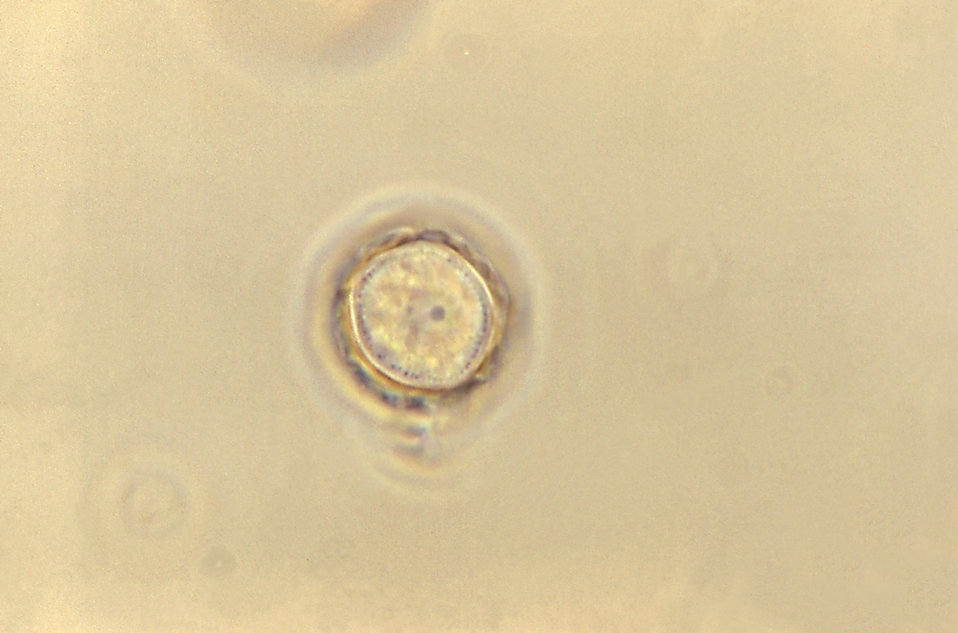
Magnified 1125X, this 1973 photomicrograph depicted an Acanthamoeba polyphaga protozoan cyst.Acanthamoeba is a microscopic, free-living ameba commonly found in the environment that can cause rare, but severe illness. Acanthamoeba causes three main types of illness involving the eye (keratitis), the brain and spinal cord (Granulomatous Amebic Encephalitis), and infections that can spread from an entry point to the entire body (disseminated disease).